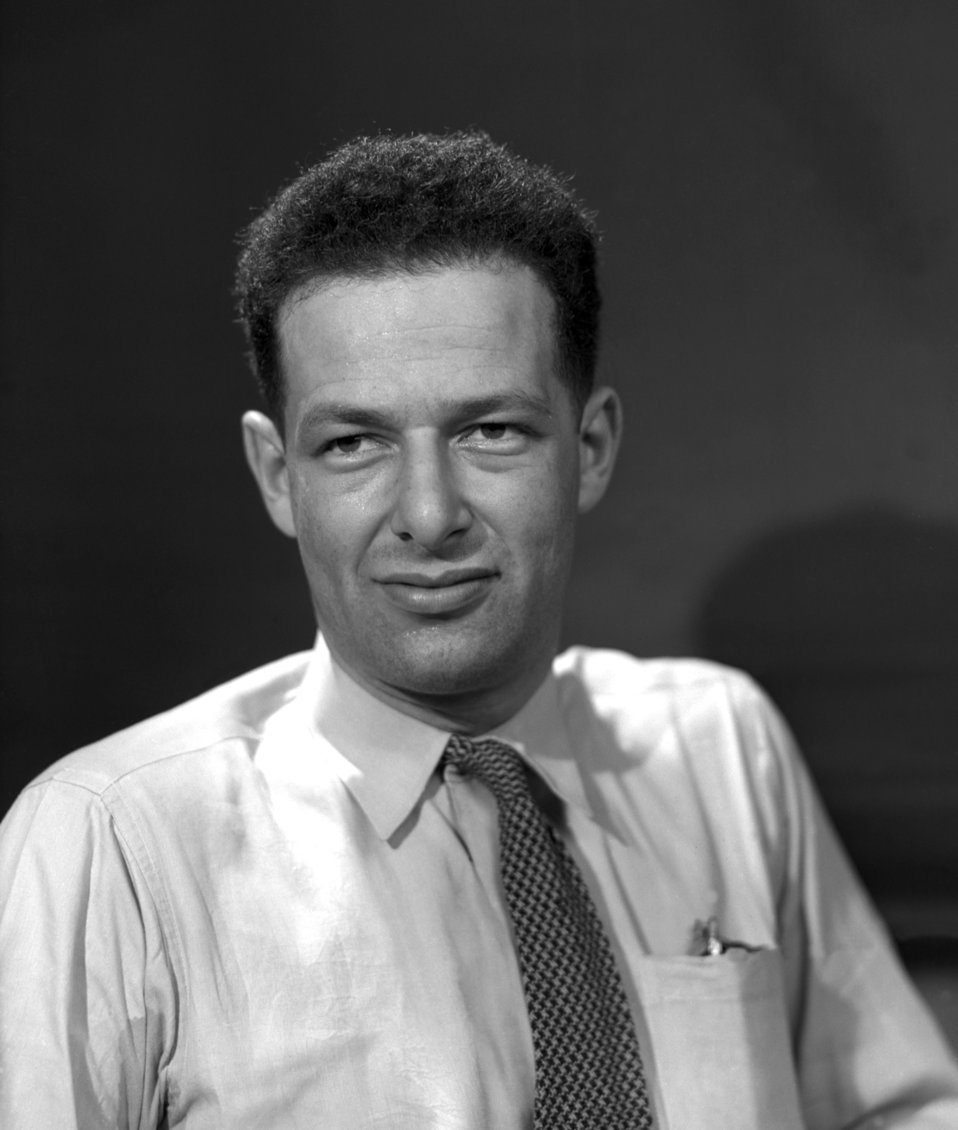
Herb Pomerance Oak Ridge Symphony

3242-2 DOE photo Ed Westcott 1-15-1947